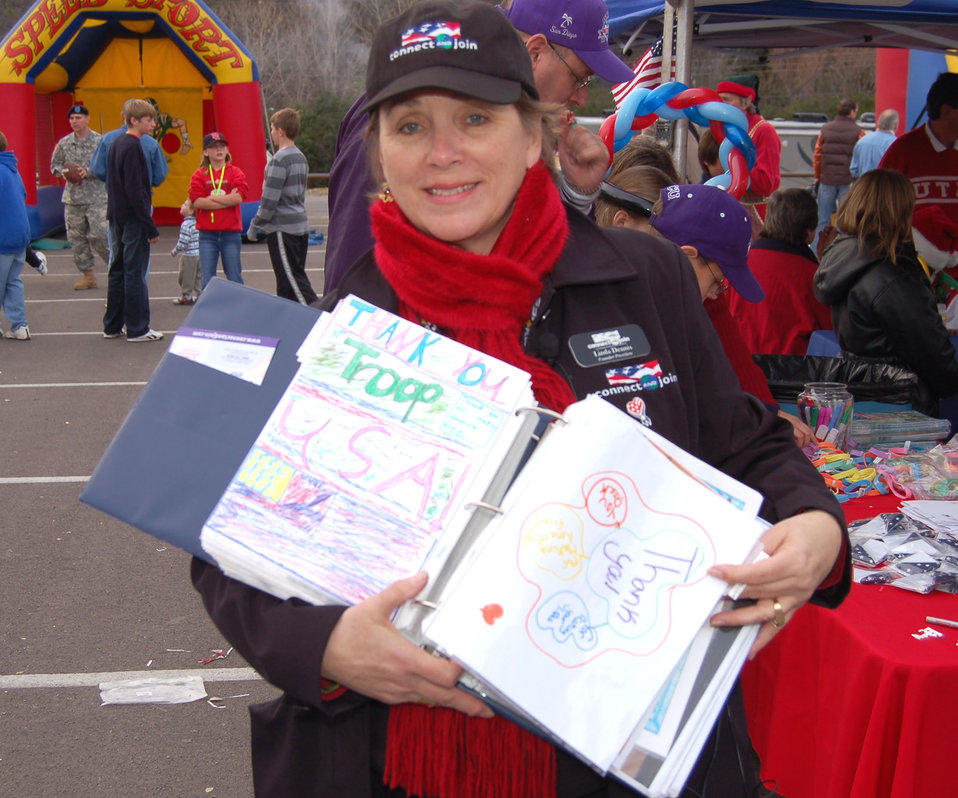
Bell Helicopter Armed Forces Bowl pays tribute to servicemembers

Linda Dennis of Connect and Join shows one of several scrapbooks she has compiled from contributions from children nationwide. Connect and Join is a secure online communications and activities site that connects families around the world who are separated by deployment and serve in the military, or have family members living away from home due to job-related responsibilities. Ms. Dennis presented the scrapbooks to Maj. Gen. Allen R. Dehnert, assistant adjutant general and commander, Texas Air National Guard, at the Bell Helicopter Armed Forces Bowl in Fort Worth, Texas, Dec. 23.